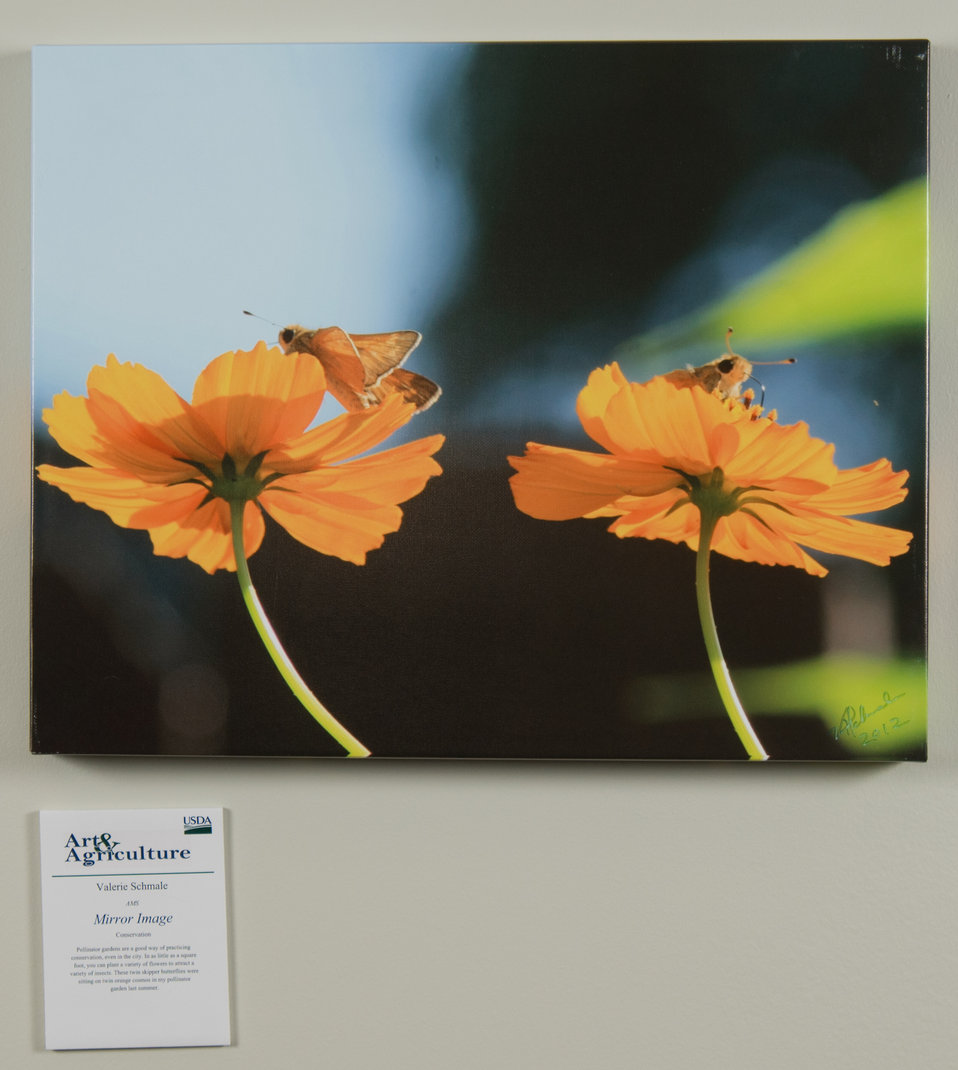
Online Viewer's Choice entries of the 2013 Art & Agriculture, Tuesday, July 9, 2013, in the South Building, Washington, D.C. Themes were expressed by employees from across the department and the contest was open to full-time and part-time USDA employees. Winning artwork will be displayed till the end of the year. U.S. Artistic expression is a creative outlet that is vital for an individual to grow and develop.